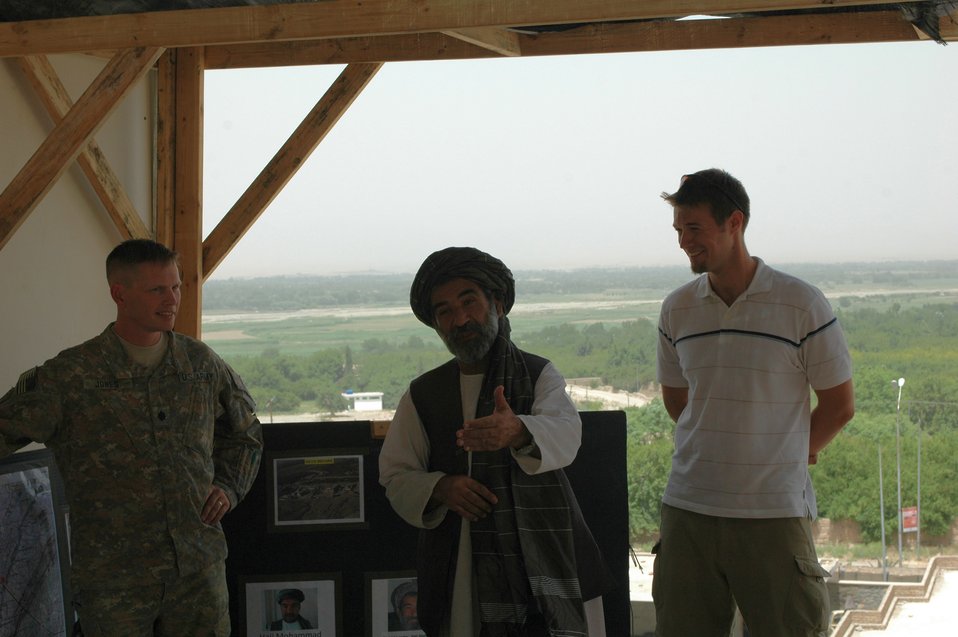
CODEL Berman